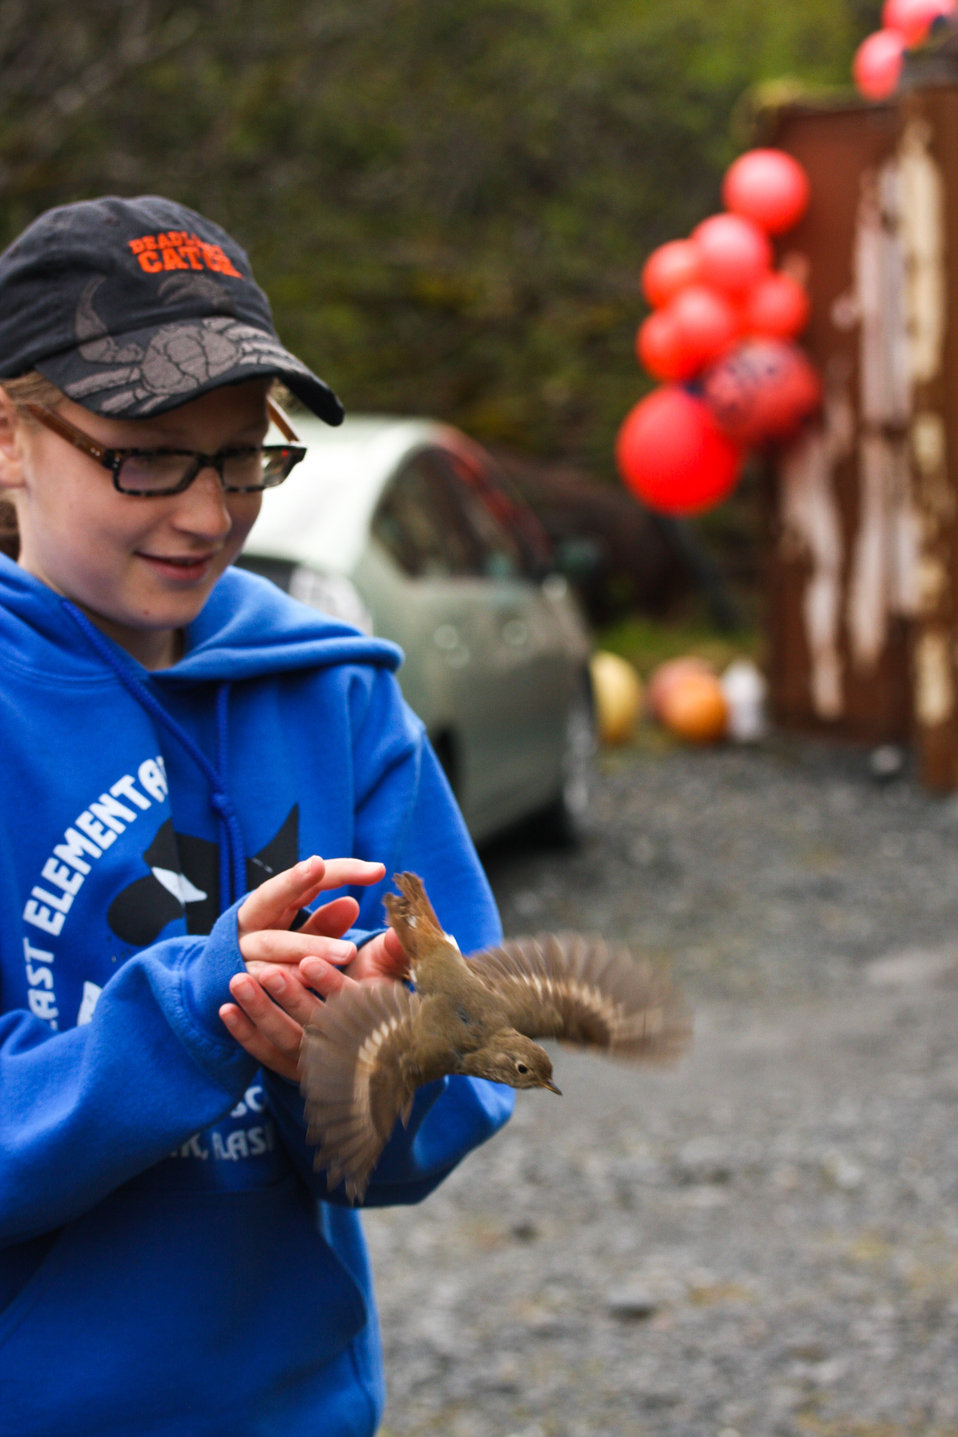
Volunteer helper Nia Pristas releases a bird after banding

Photo Credit: Lisa Hupp/USFWS
Source: Kodiak NWR